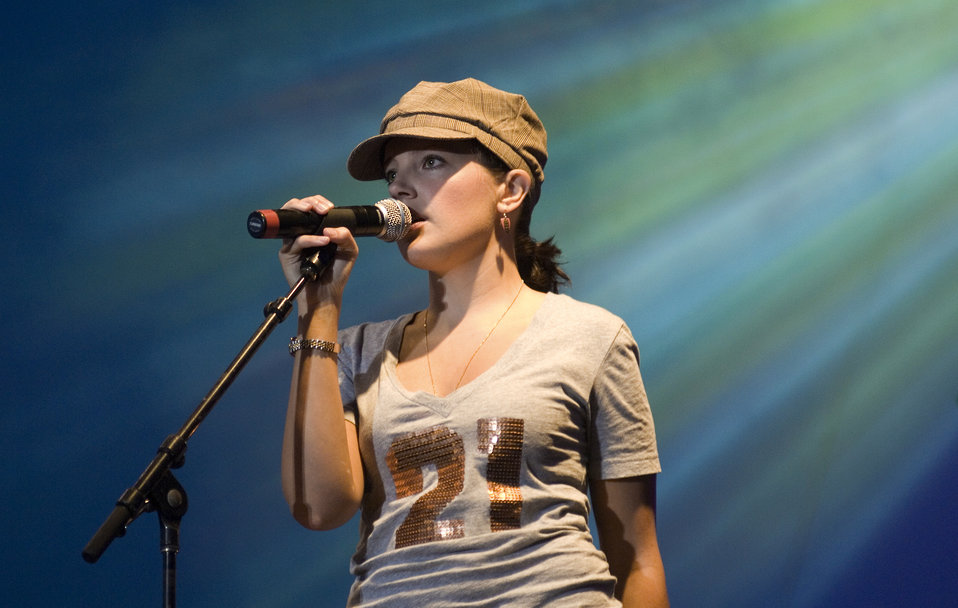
Air Force Week in the Heartland kicks off with a bang

Country music singer Jessica Andrews performs her No. 1 country hit song